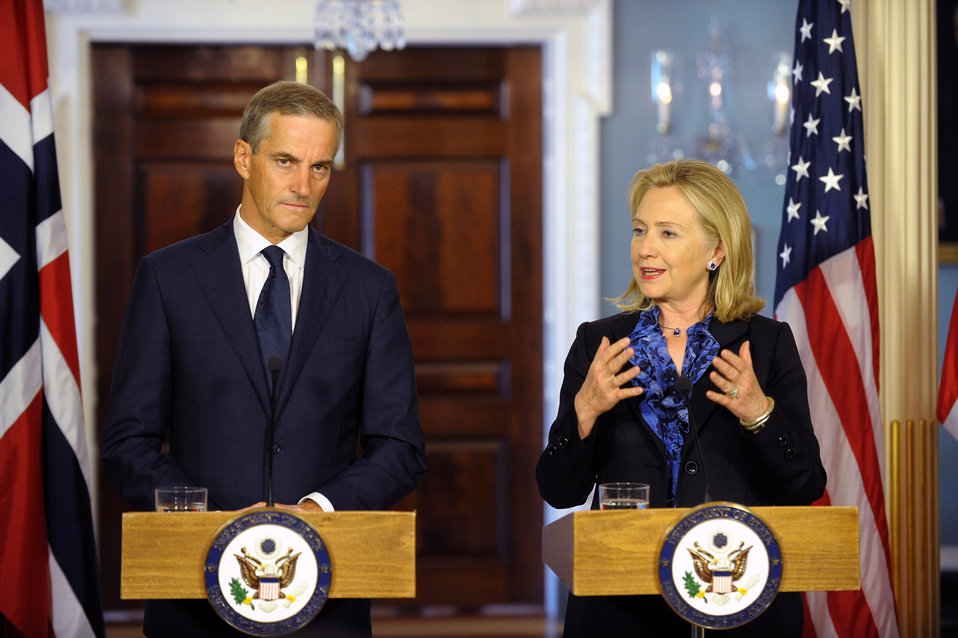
Secretary Clinton and Norwegian Foreign Minister Stoere Address Reporters

U.S. Secretary of State Hillary Rodham Clinton and Norwegian Foreign Minister Jonas Gahr Stoere hold a joint press conference after their bilateral meeting at the U.S. Department of State in Washington, D.C., on August 12, 2011.